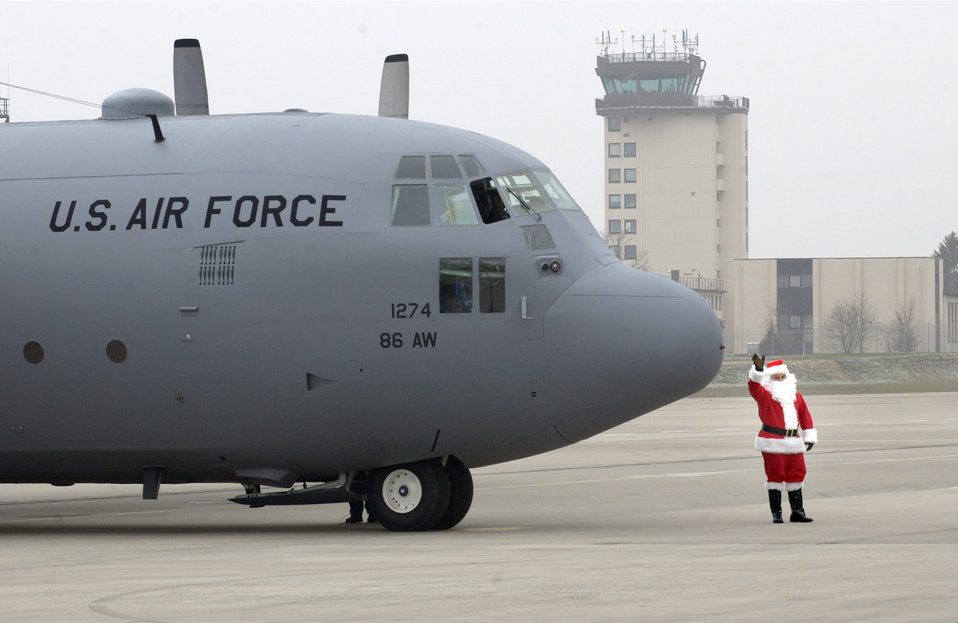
Santa Claus is coming to town

RAMSTEIN AIR BASE, Germany -- Santa arrives here by a C-130 Hercules Dec. 12 to say hello to the kids at the 86th Operations Group Christmas party.